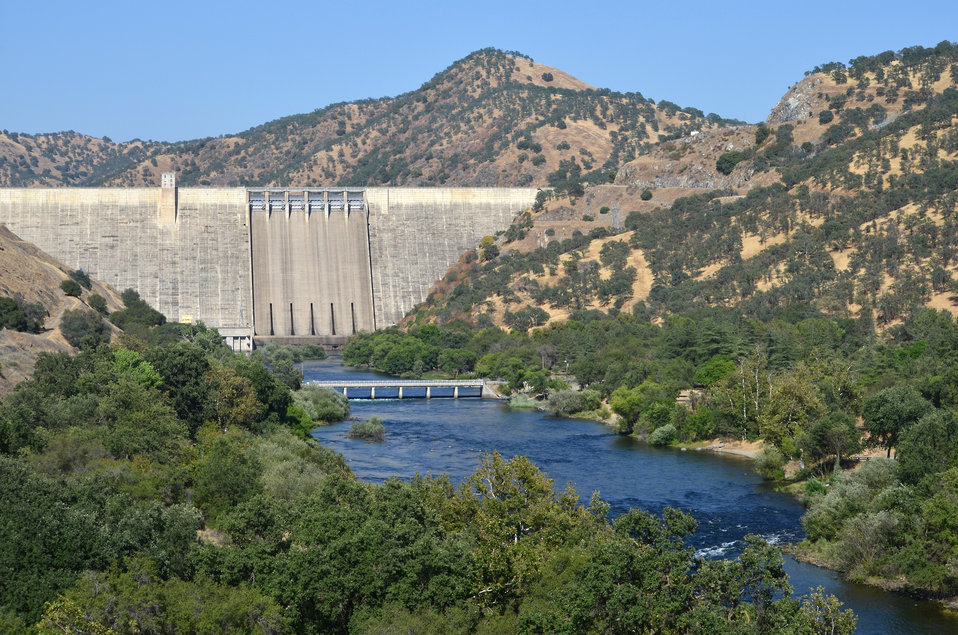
A view of Pine Flat Dam near Fresno, Calif., June 17, 2013. Owned and operated by the U.S. Army Corps of Engineers Sacramento District, Pine Flat Dam reduces flood risk to Fresno County and stores water used for water supply and hydroelectric power.